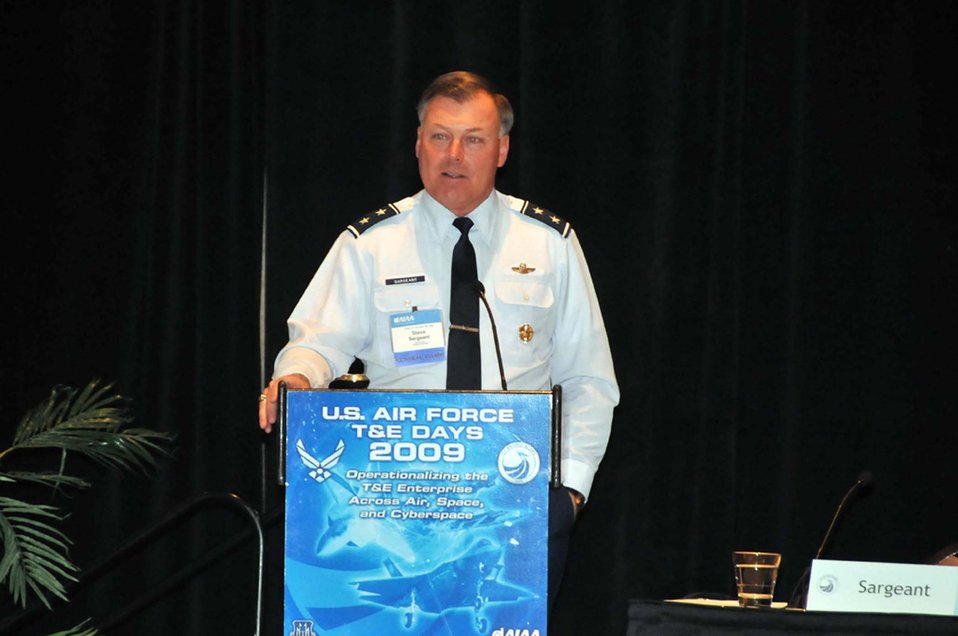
Air Force conference focuses on test and evaluation

Air Force Operational Test and Evaluation Center Commander Maj. Gen. Stephen T. Sargeant speaks at the 2009 U.S. Air Force Test and Evaluation Days Conference in Albuquerque, N.M., Feb 10-12. The focus of the conference was about operationalizing the Air Force test and evaluation enterprise across the domains air, space, and cyberspace.